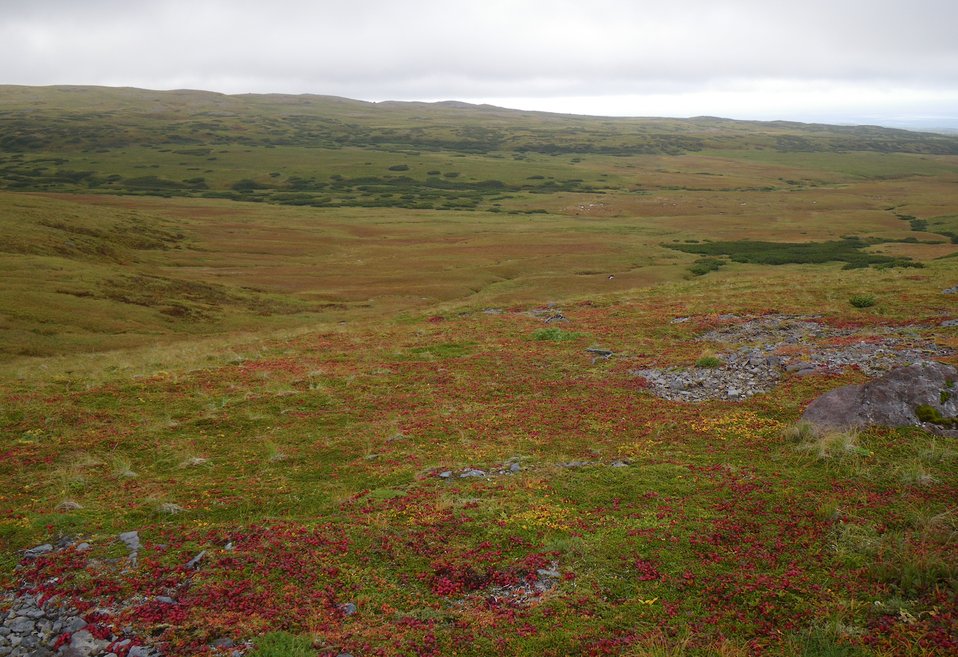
Fall colors

Wilderness near Frosty Peak, Izembek National Wildlife Refuge
Photo by Kristine Sowl,
USFWS, Public Domain